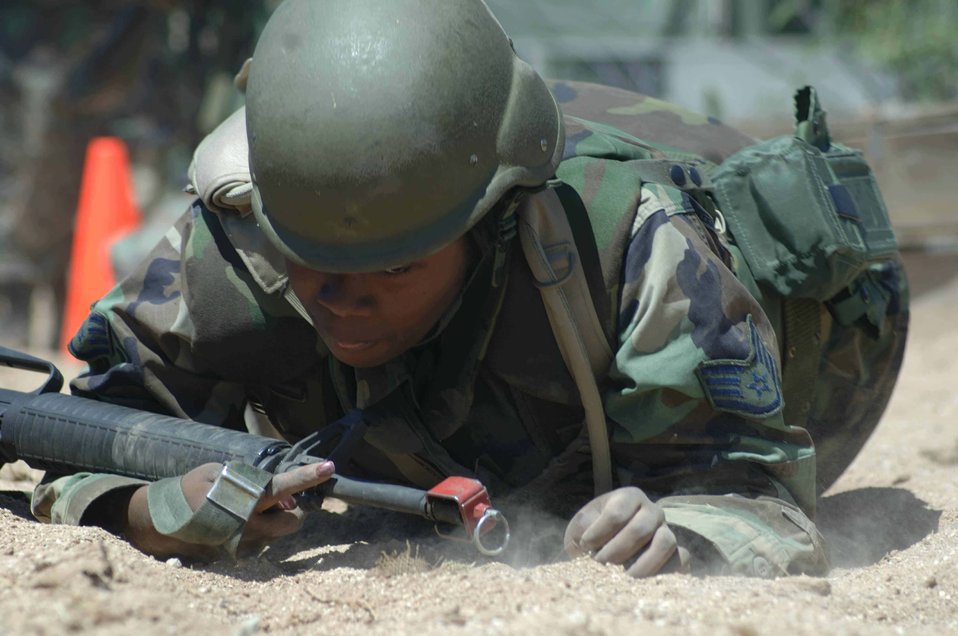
Contingency crawl

DAVIS-MONTHAN AIR FORCE BASE, Ariz. -- Staff Sgt. Nikesha Perryman performs the low-crawl technique during a deployment training class here. The training prepares Airmen for deployment and day-to-day life during contingency. Sergeant Perryman is assigned to the 355th Wing.